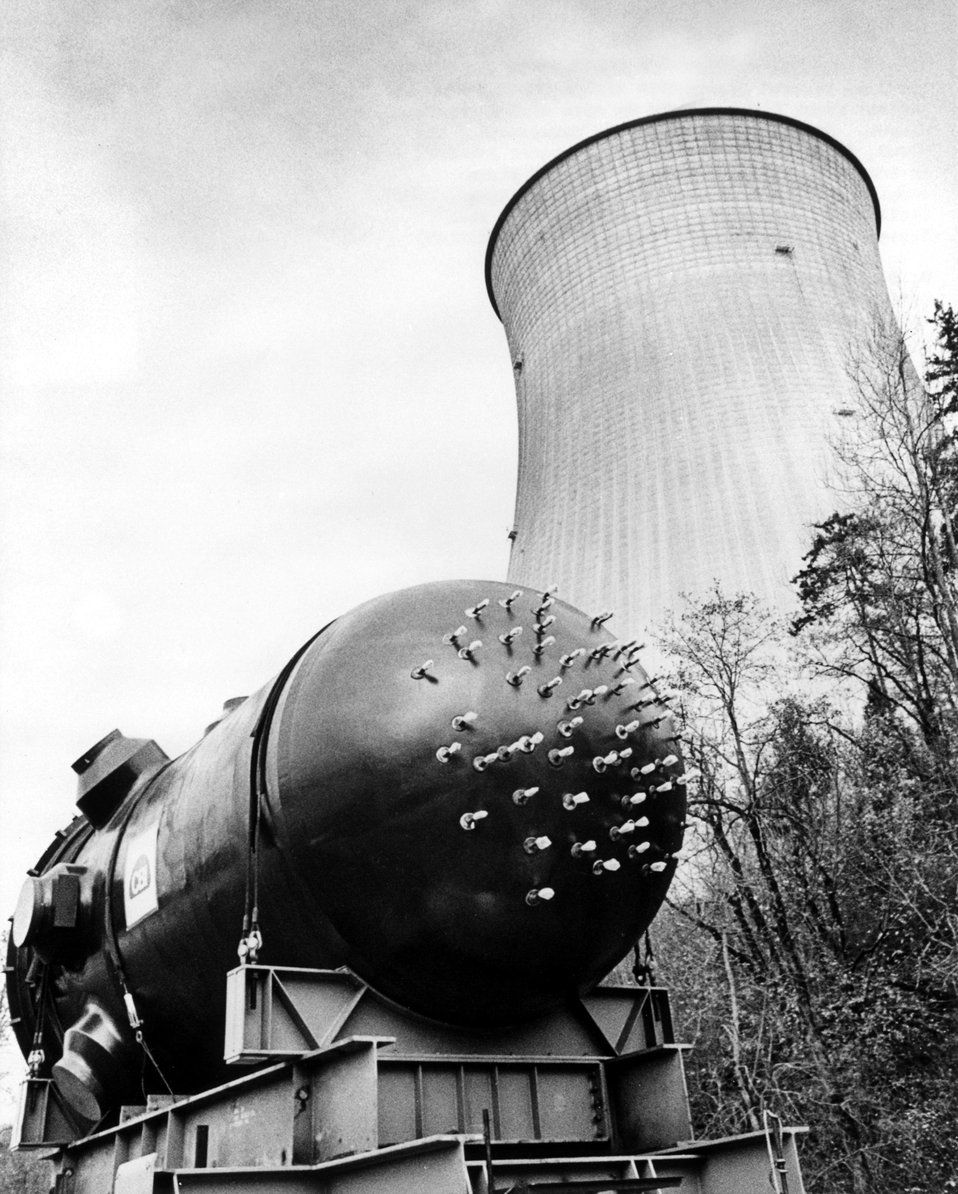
Pressure vessel for Portland General Electric's 1130 megawatt Trojan Nuclear Power Plant arrives at the site near Rainier, Oregon. Circa 1972.